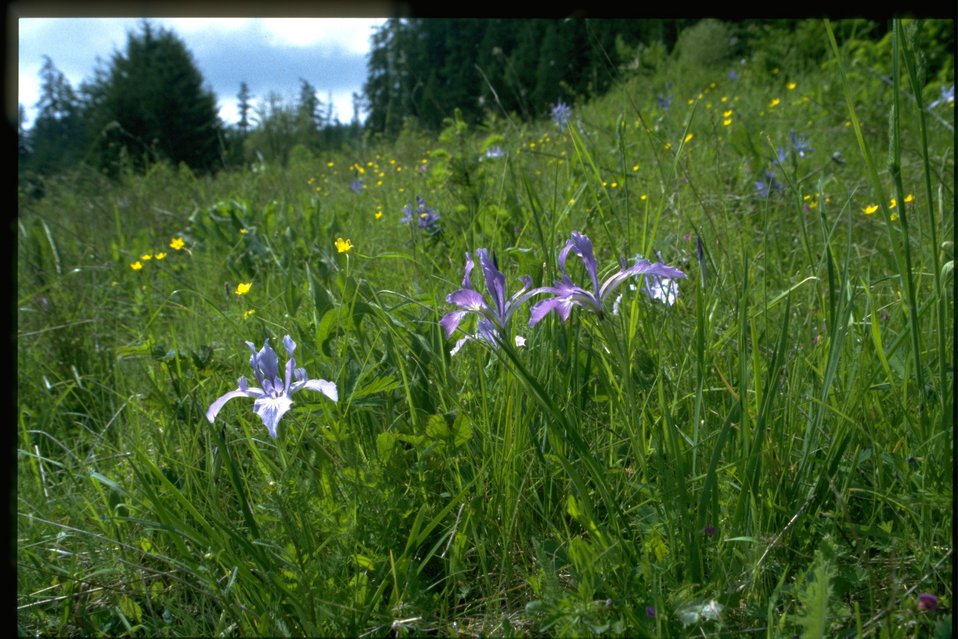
Farshot of meadow, Iris, Buttercup.